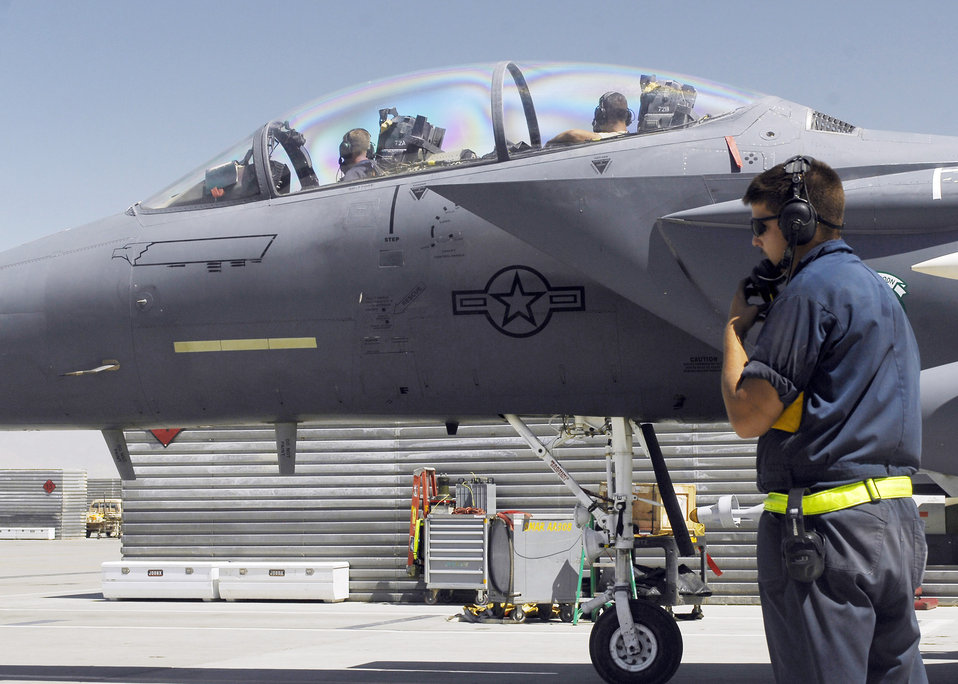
Keeping the F-15E flying

Senior Airman Matthew Jones (front seat) and Staff Sgt. Robert Burton (rear seat) sit in an F-15E Strike Eagle at Bagram Airfield, Afghanistan, during an inspection to check that the flight controls are working properly. During the test, they stay in constant communication with Senior Airman Daniel Scerri (on the ground). All three Airmen are from the 336th Expeditionary Fighter Squadron and are deployed from Seymour Johnson Air Force Base, N.C.